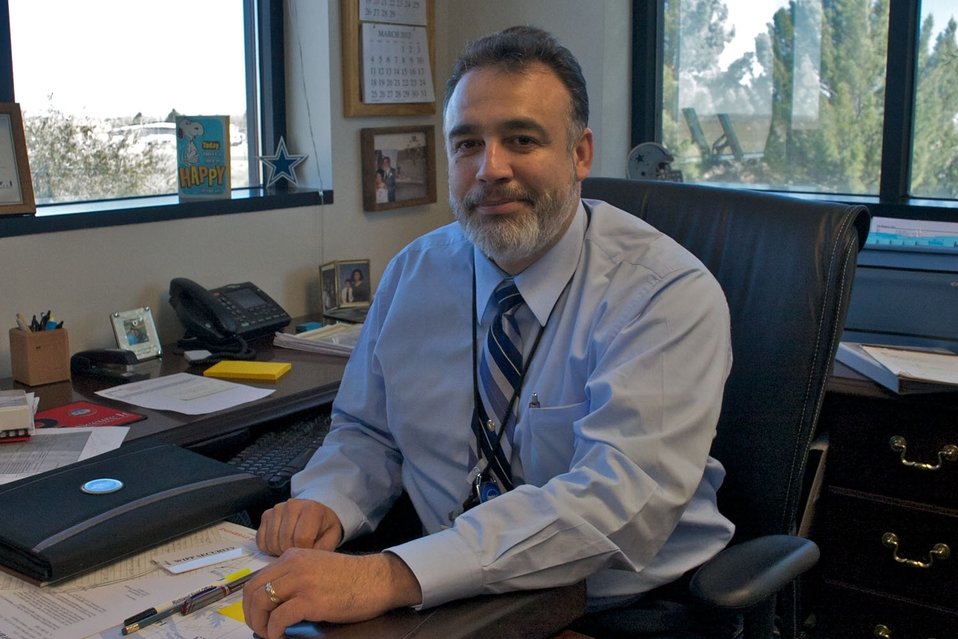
CBFO Manager Joe Franco Hits the Ground Running

CBFO Manager Joe Franco, a native of Carlsbad, New Mexico, returned to Carlsbad in February to lead the WIPP team of the CBFO federal and DOE contractors and laboratories workforce.

Franco’s last six years were at the U.S. Department of Energy (DOE) Richland Operations Office (RL) as the RL Assistant Manager. That coupled with a previous 17 years of experience at the Waste Isolation Pilot Plant (WIPP), and he was able to hit the ground running upon arrival at CBFO.